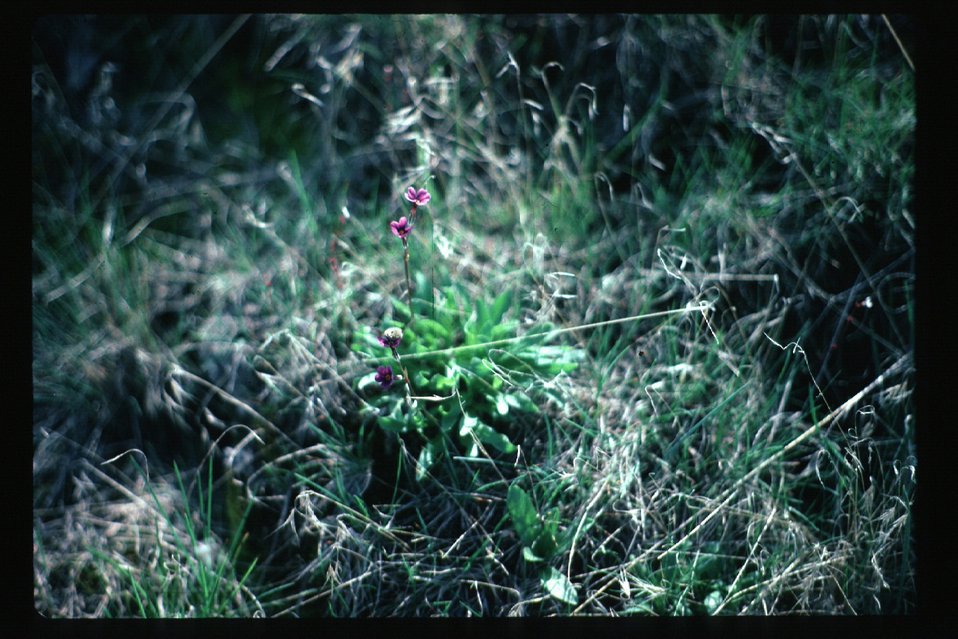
Primula cusickii cuscik's primrose Wildflower